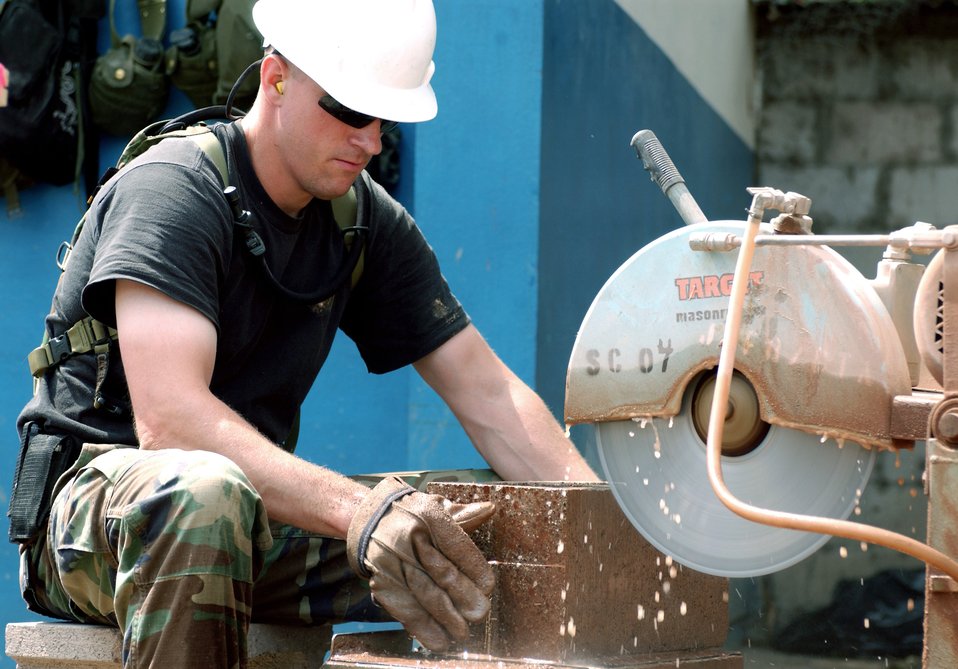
New Horizons provides training, spreads goodwill

TEPETITAN, El Salvador -- Senior Airman Jake Kurtz uses a masonry saw to cut stone blocks for a clinic-expansion project here for exercise New Horizons. About 600 Airmen, Soldiers, Sailors and Marines are providing humanitarian assistance to people of El Salvador during the U.S. Southern Command-sponsored readiness training exercise. Airman Kurtz is assigned to the 28th Civil Engineer Squadron.